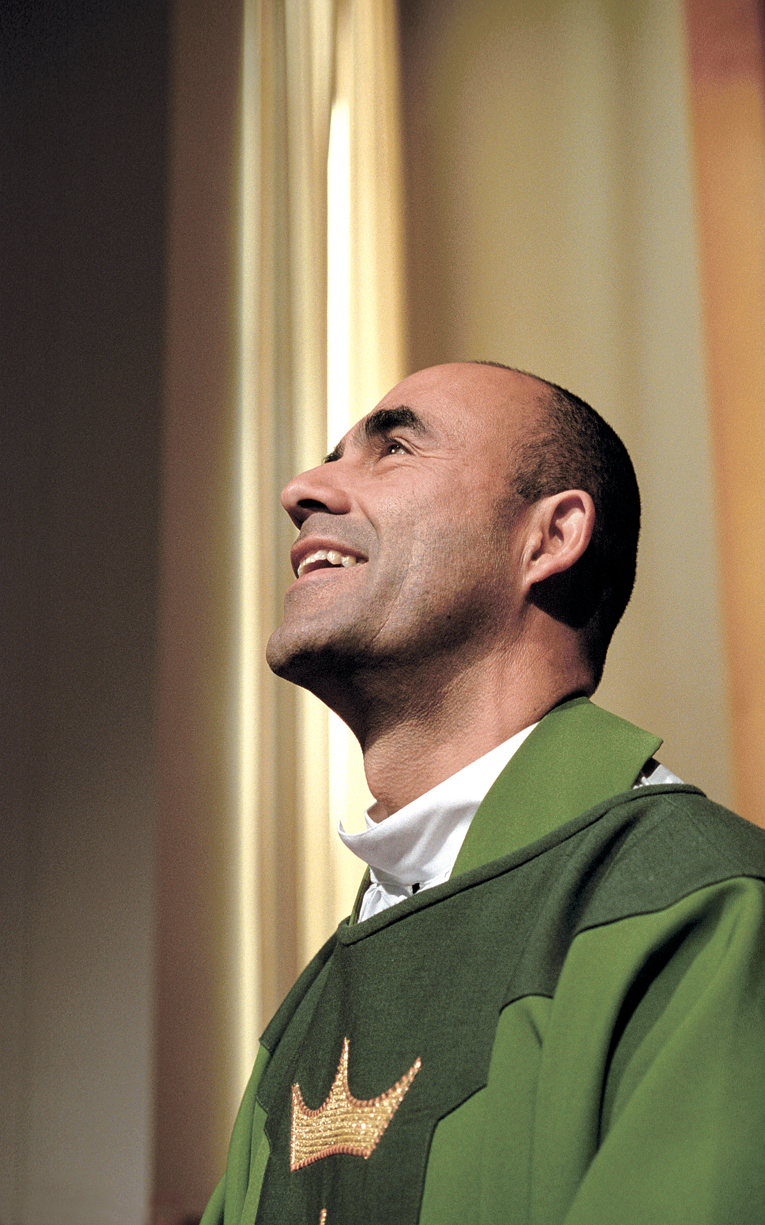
Priest tackles life at Tinker

TINKER AIR FORCE BASE, Okla. -- Although many things, from Air Force acronyms to household chores, have challenged Chaplain (Capt.) Gildardo Garcia since his term as a chaplain began, the Colombian native is anxious to serve the community here. Garcia was granted U.S. citizenship in August and joined the Air Force in November.